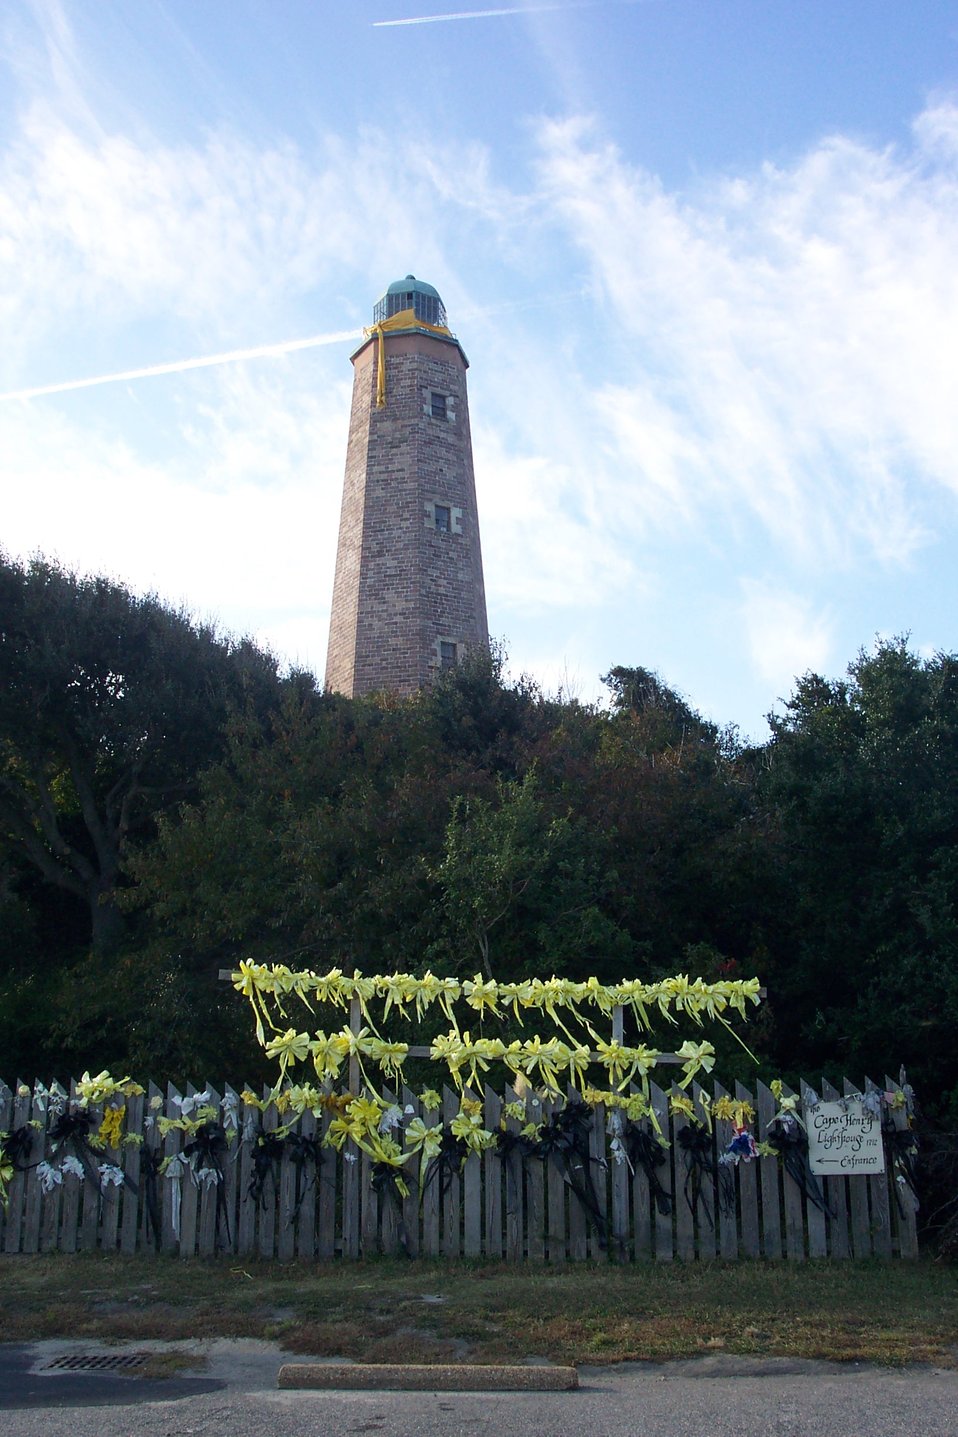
Old Cape Henry Lighthouse, the first public works project undertaken by the United States Government in 1791 and was completed in 1792.